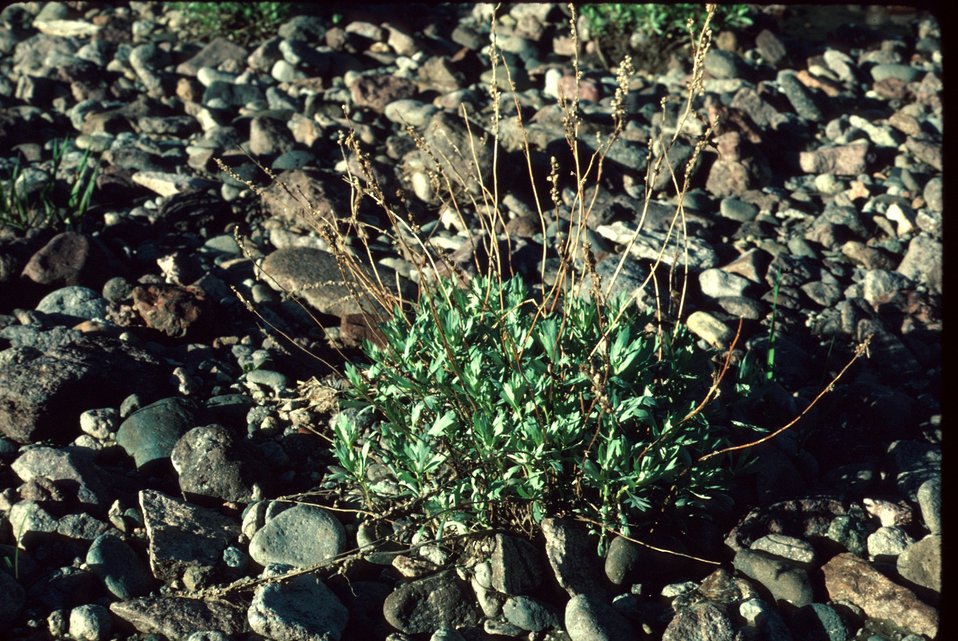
Artemisia ludoriciana Wildflower Wormwood